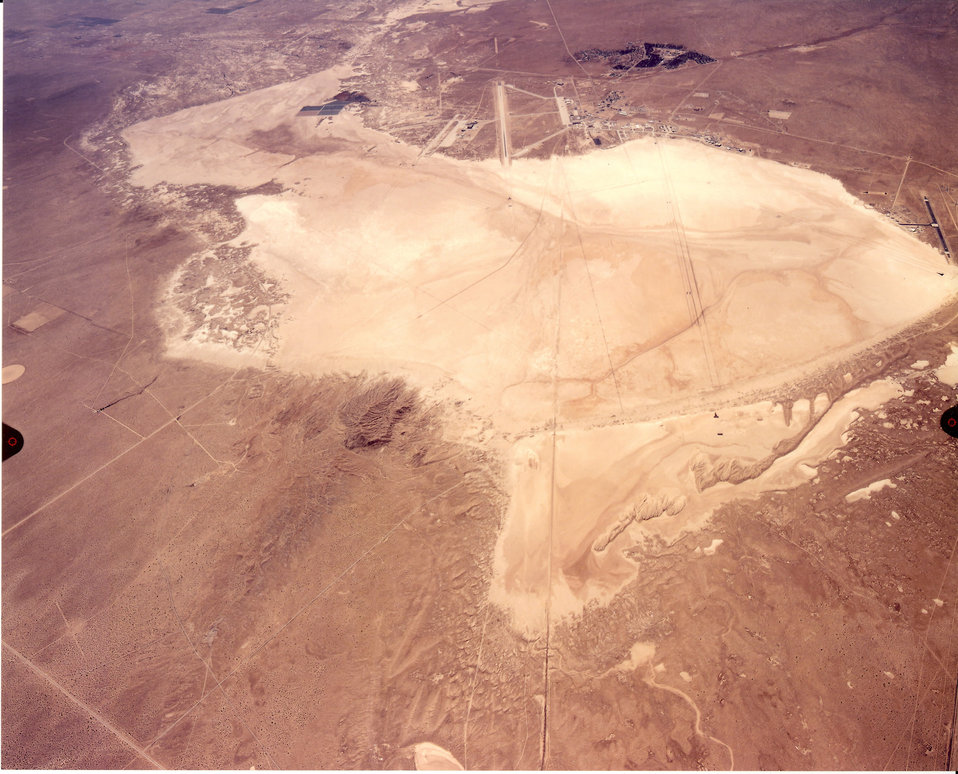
Rogers Dry Lake, Calif.

An overhead view of Rogers Dry Lake on Edwards Air Force Base, Calif.